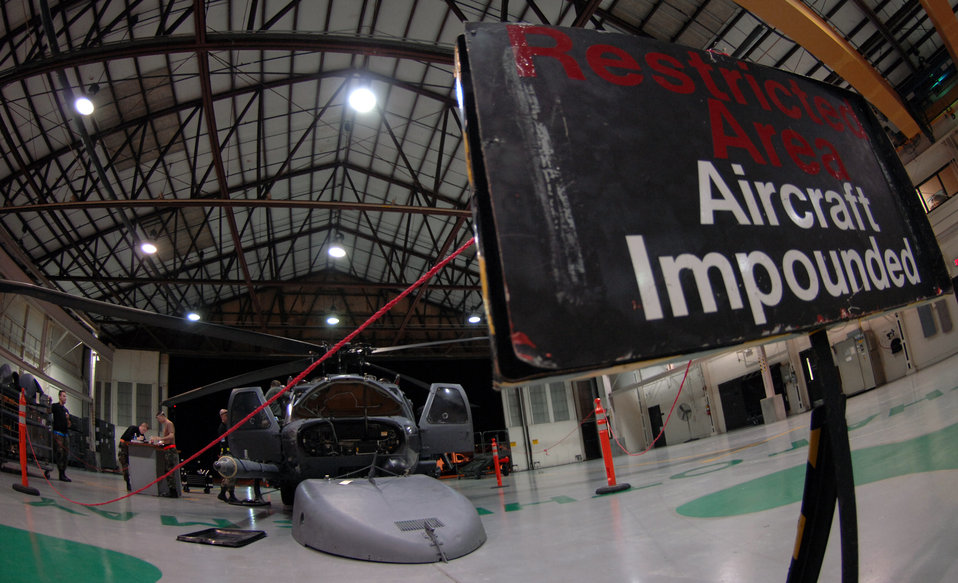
Paving the way

Airmen from the 23rd Equipment Maintenance Squadron work on an impounded HH-60G Pave Hawk helicopter Oct. 31 in a hangar at Moody Air Force Base, Ga. Moody AFB Airmen work around the clock to ensure flight success of the aircraft.